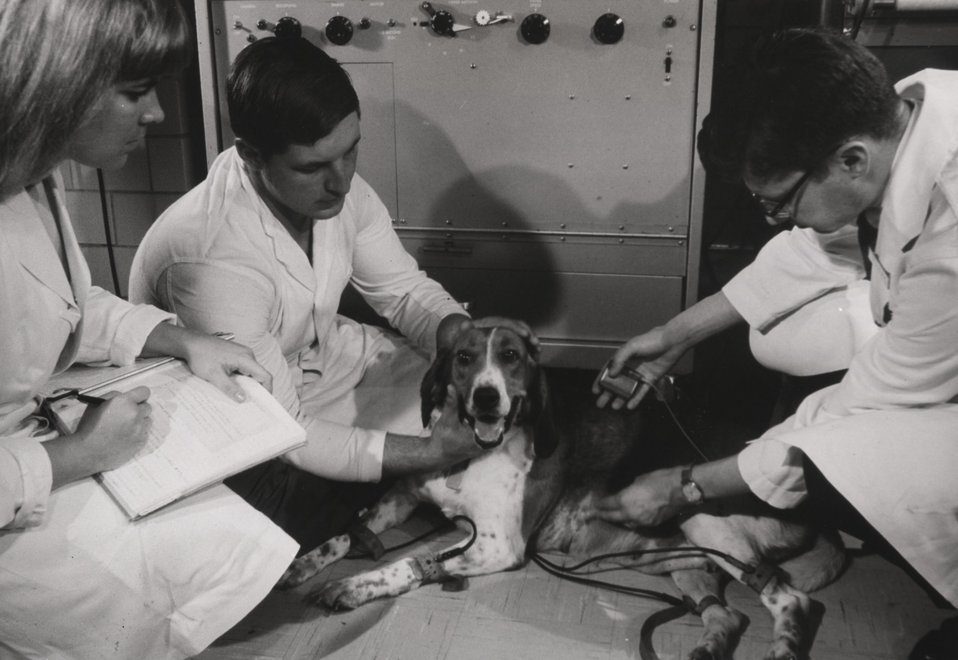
A nuclear-powered pacemaker was implanted in Beagle Brunhilde in 1969 at the National Heart Institute of the National Institute of Health, Bethesda, Maryland. c. 1972